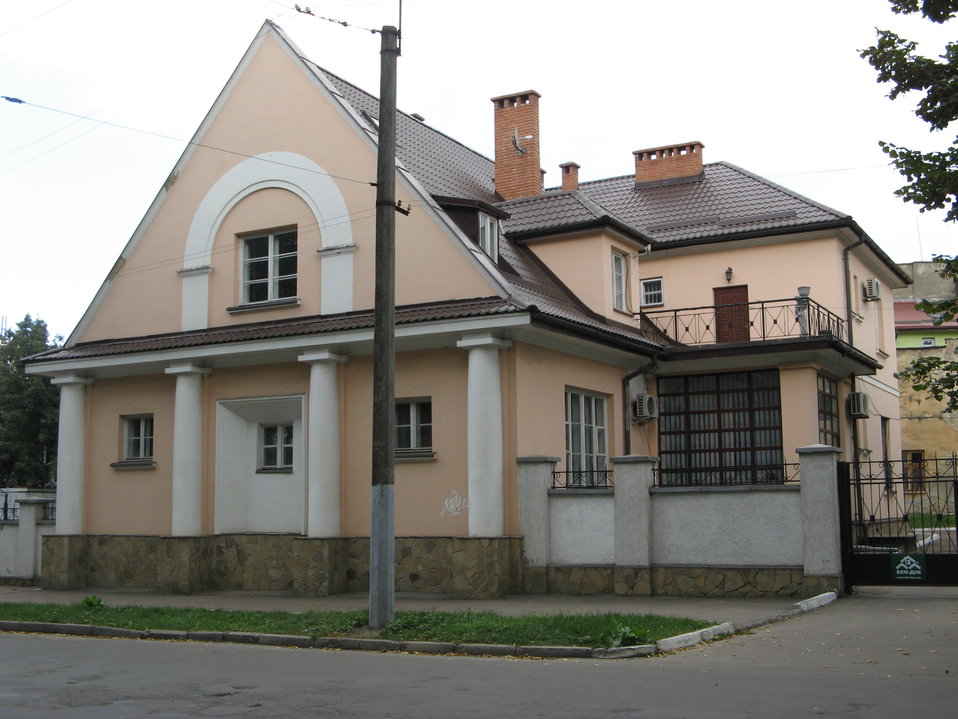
Українська: 112, вул. Замарстинівська (Львів)